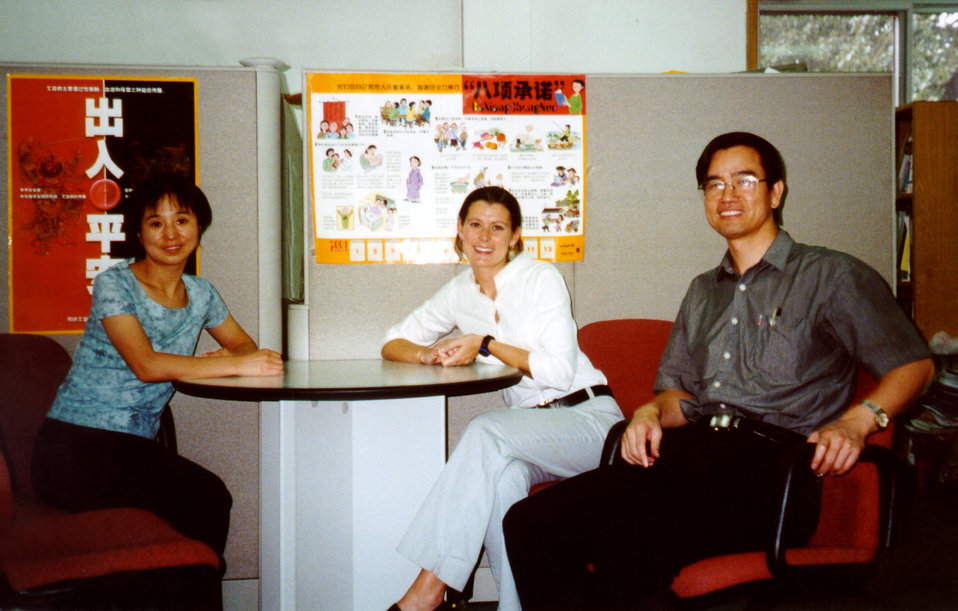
Here, Brittney Anderson-Spilker, of the CDC (Cntr), is among colleagues at UNICEF Beijing: Ms. Suyan (Lt) and Dr. Shengli (Rt).